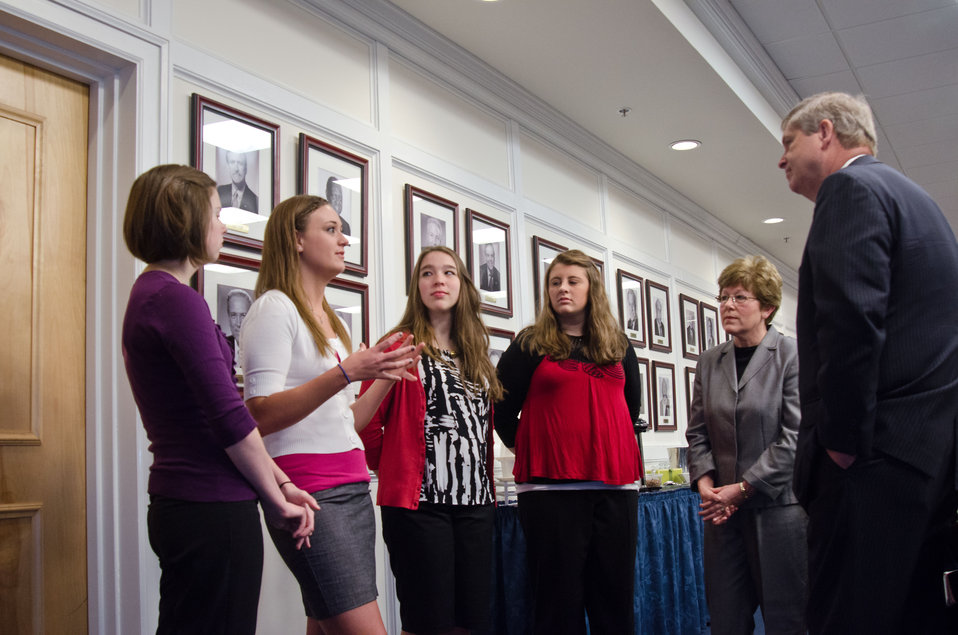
Agriculture Secretary Tom Vilsack speaks with 4-H members (l to R) Abigail Peterson, Savannah Ruby, Amy Prestholt, Kayla Krull and Iowa State University Extension and Outreach youth program specialist Carol Ehlers at the National 4-H Youth Center in Chevy Chase, MD, on Monday, March 26, 2012.